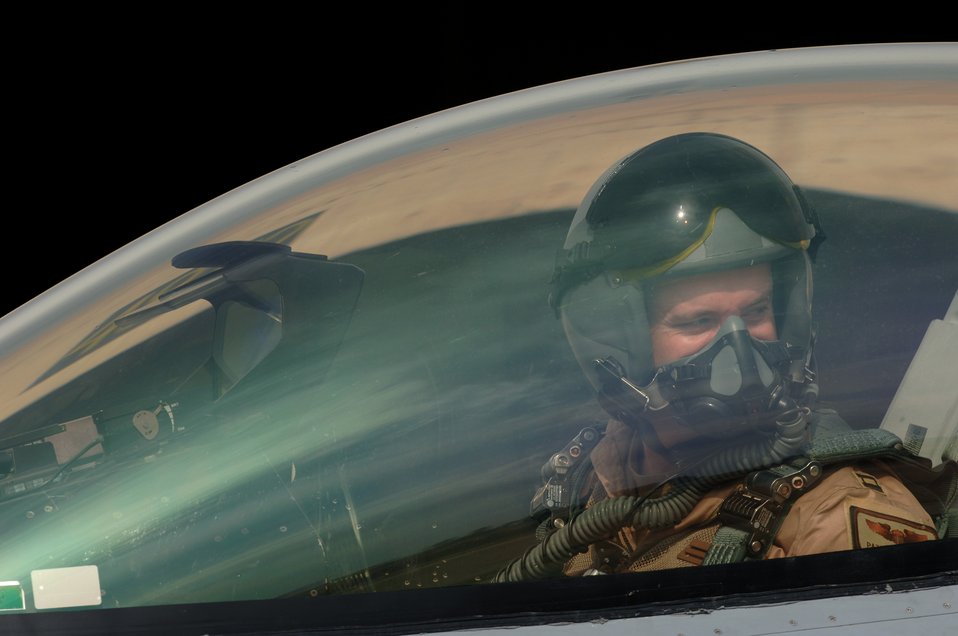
Falcons ready to leave the nest

Capt. Patrick Noonan prepares to take off in an F-16 Fighting Falcon on a Operation Iraqi Freedom mission Feb. 13 from Balad Air Base, Iraq. Captain Noonan is deployed to the 510th Expeditionary Fighter Squadron from Aviano Air Base, Italy. These missions involve flying close-air support to support coalition troops, infrastructure protection, reconstruction activities and operations to deter and disrupt terrorist activities.